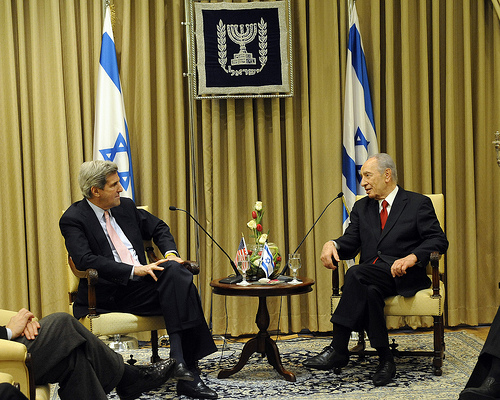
Senator Kerry With Israeli President Shimon Peres

Senator John F. Kerry speaks with Israeli President Shimon Peres in Jerusalem on March 1, 2010.